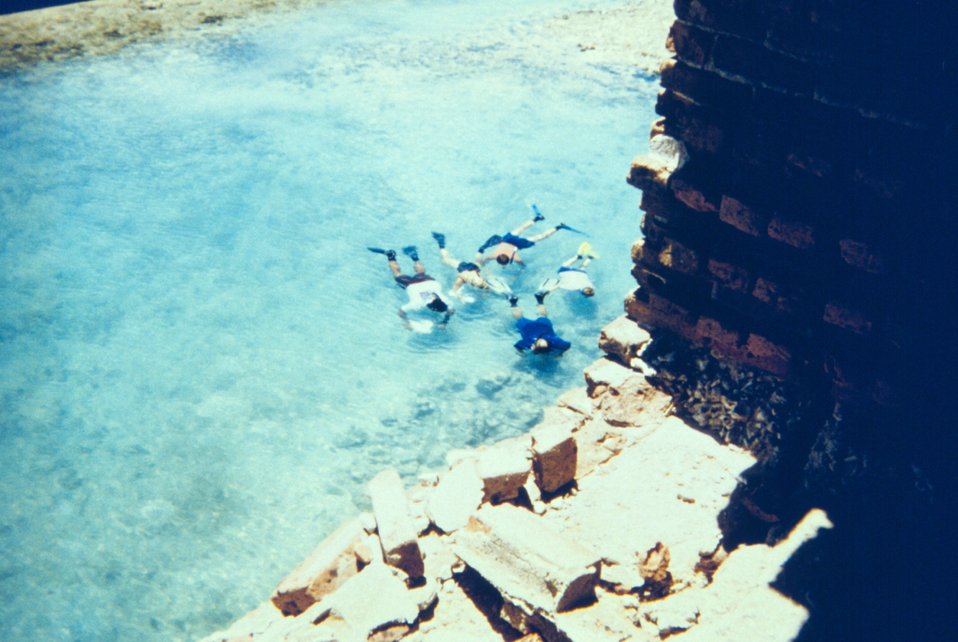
Snorkelers studying marine life in the moat